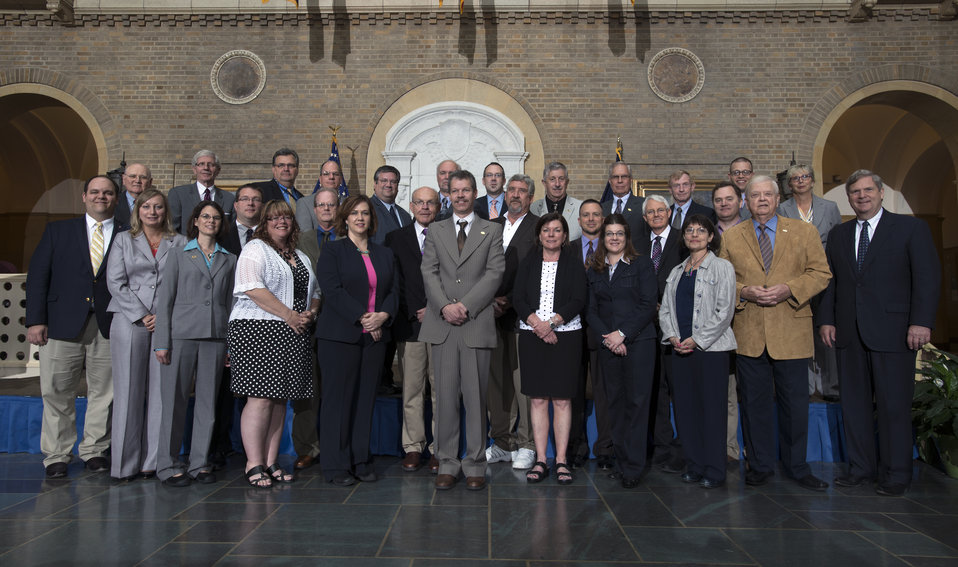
Agriculture Secretary Tom Vilsack stands with the National Association of Farm Broadcasters (NAFB) on the patio of the U.S. Department of Agriculture (USDA) in Washington, D.C. on Tuesday, May 6, 2014.